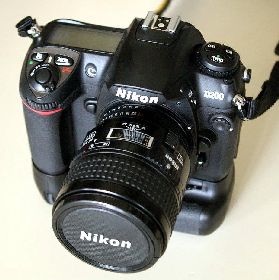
Nikon D200 mit Hochformatgriff und AF Micro 60mm/2.8D Objektiv